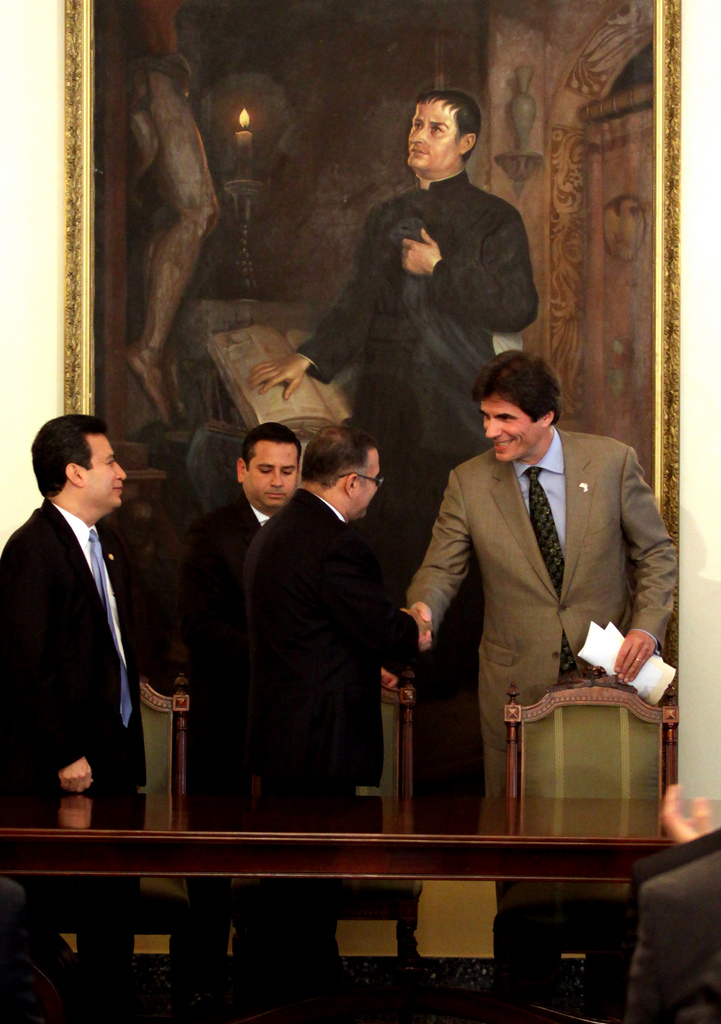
Assistant Secretary Fernandez Shakes Hands With Salvadoran President Funes

Assistant Secretary of State for Economic, Energy and Business Affairs Jose Fernandez shakes hands with Salvadoran President Mauricio Funes at the Presidential Palace in San Salvador, El Salvador, on November 3, 2011.